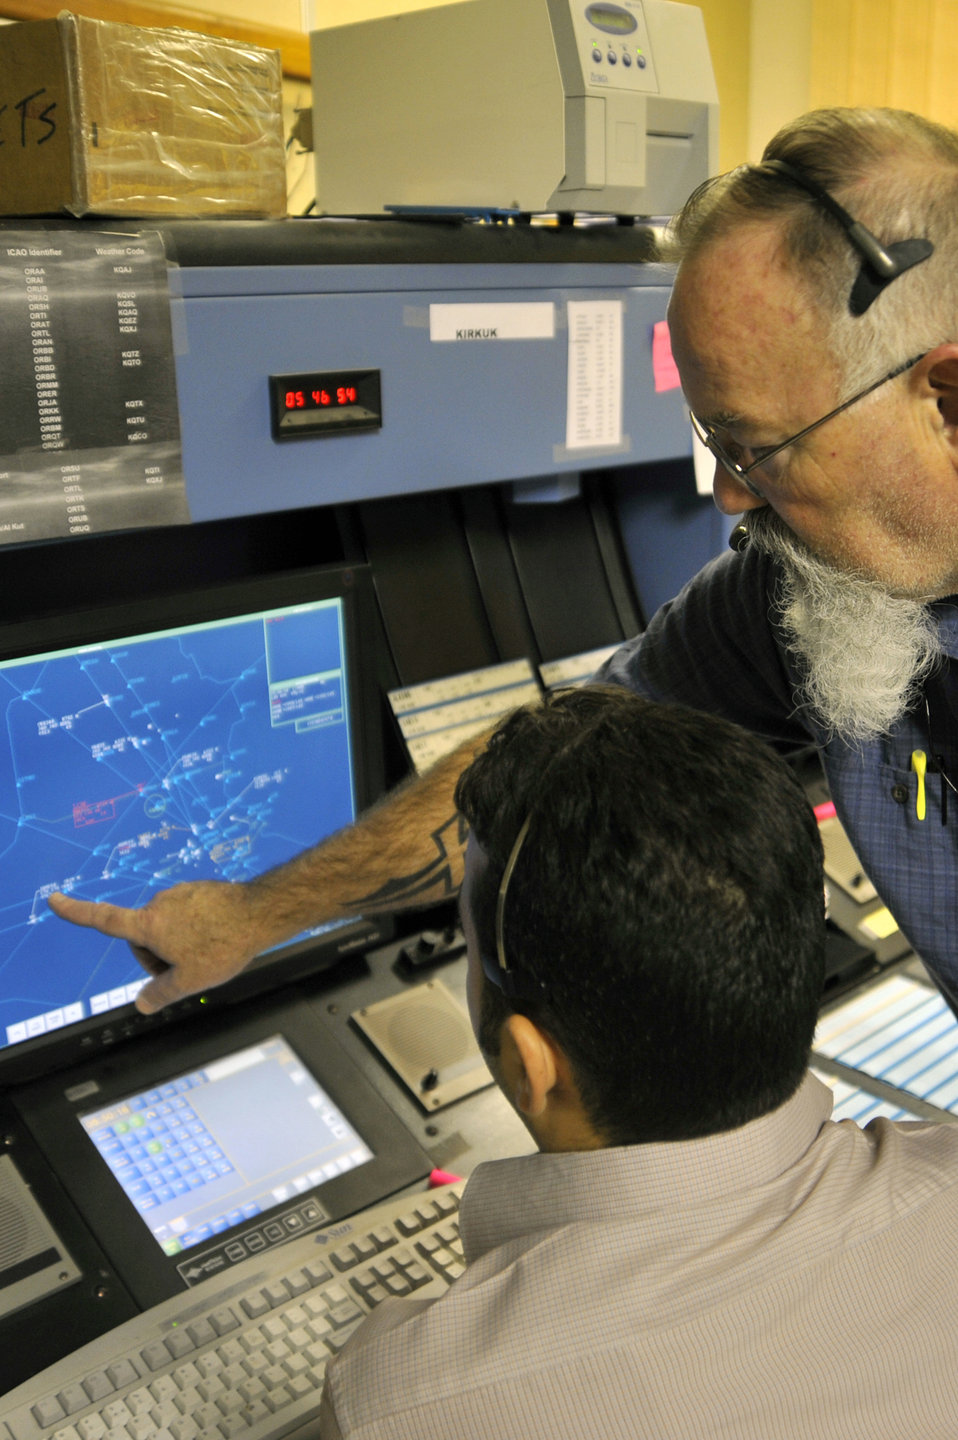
Air Force Hands over Airspace

Tom Samples advises an Iraqi air traffic controller, directing the airspace of aircraft traveling through Iraq, Aug. 31, 2010, at Baghdad International Airport. Mr. Samples is contracted by the Iraq Civil Aviation Authority to train and advise Iraqi controllers. The Air Force is turning over airspace control from 15,000 to 24,000 feet in the northern sector of Iraq-known as the Kirkuk sector.